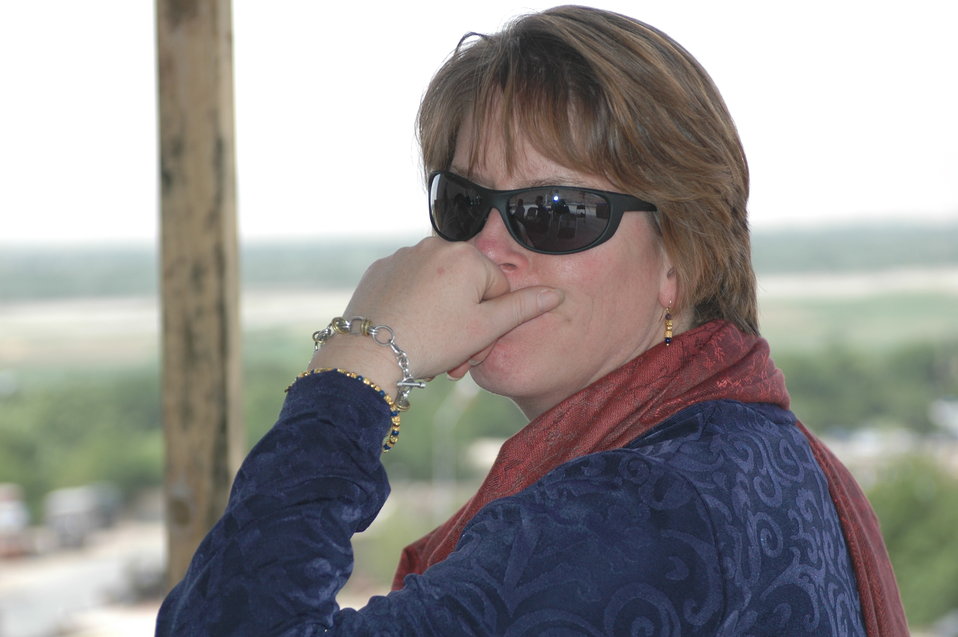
Dr Shah Visits Kandahar April 9, 2010